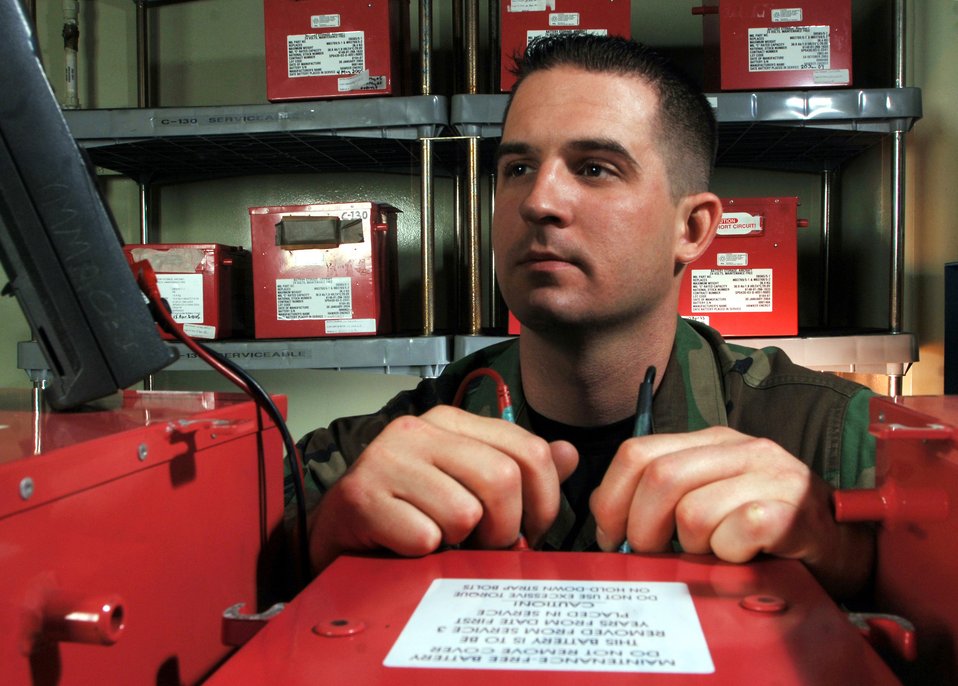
Voltage check

Senior Airman Josh Paul uses a multimeter to check the voltage of lead acid batteries during periodic inspection at a facility Thursday, March 23, 2006, at Yokota Air Base, Japan. The batteries are used to provide power to C-130 Hercules aircraft and UH-1 Huey helicopters here. Airman Paul is an electro and environmental technician with the 374th Maintenance Squadron.